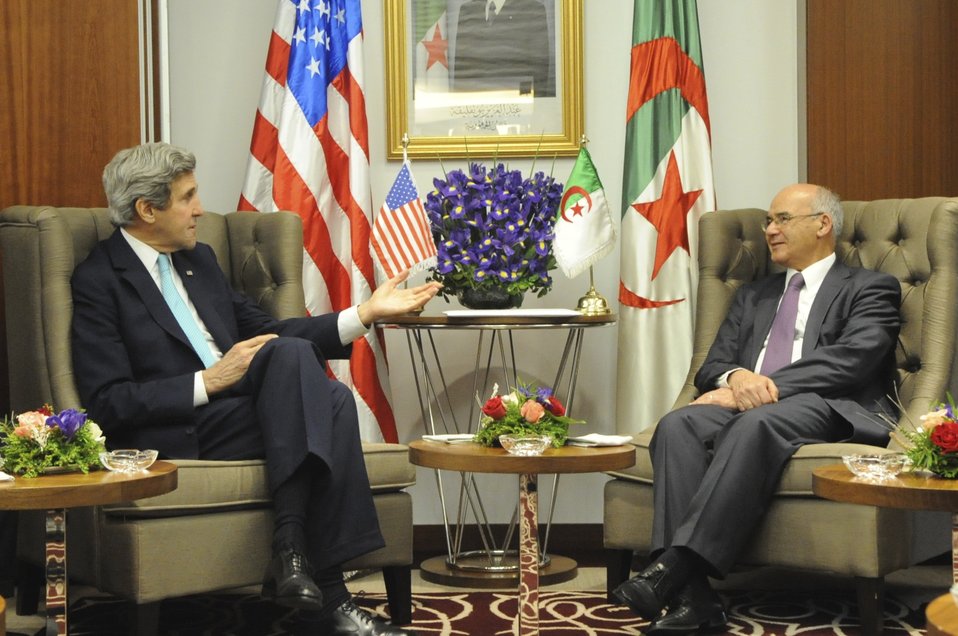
Secretary Kerry Meets With Acting Algerian Prime Minister Yousfi in Algiers

U.S. Secretary of State John Kerry meets with Algerian Acting Prime Minister Youcef Yousfi following a Strategic Dialogue between their two countries in Algiers on April 3, 2014.